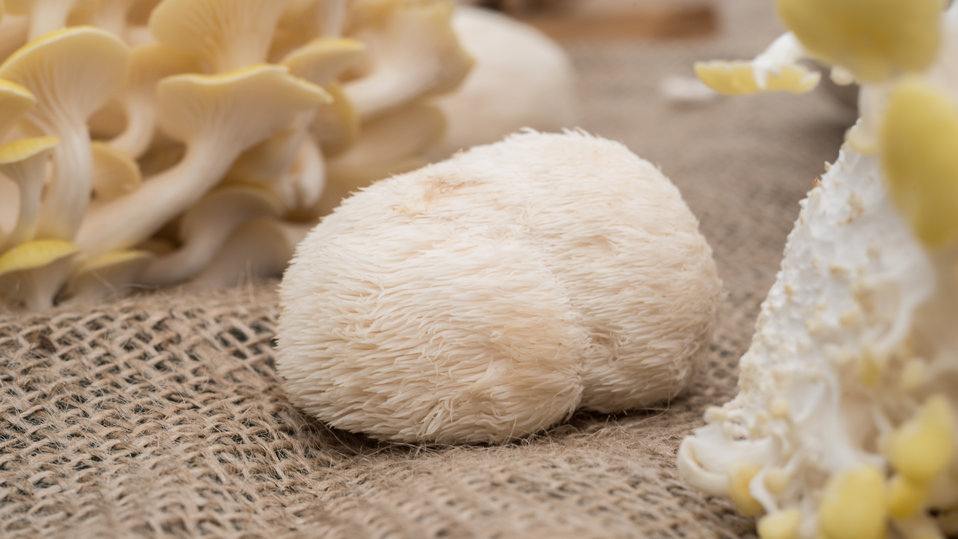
Pom pom (egg shaped) mushrooms on display at the U.S. Department of Agriculture (USDA) farmers markets and Harvest Festival at the USDA Whitten Building east parking lot in Washington, DC, on Friday, November 22, 2013.